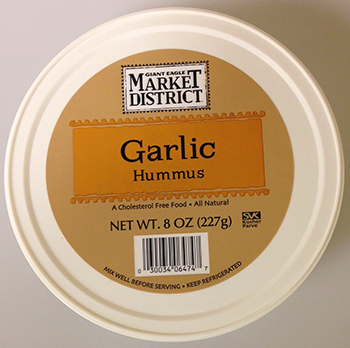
RECALLED – Hummus and dip products

May 19, 2014 – Product Recall – Lansal, Inc. Voluntarily Recalls Hummus & Dip Products Due to Possible Health Risk.